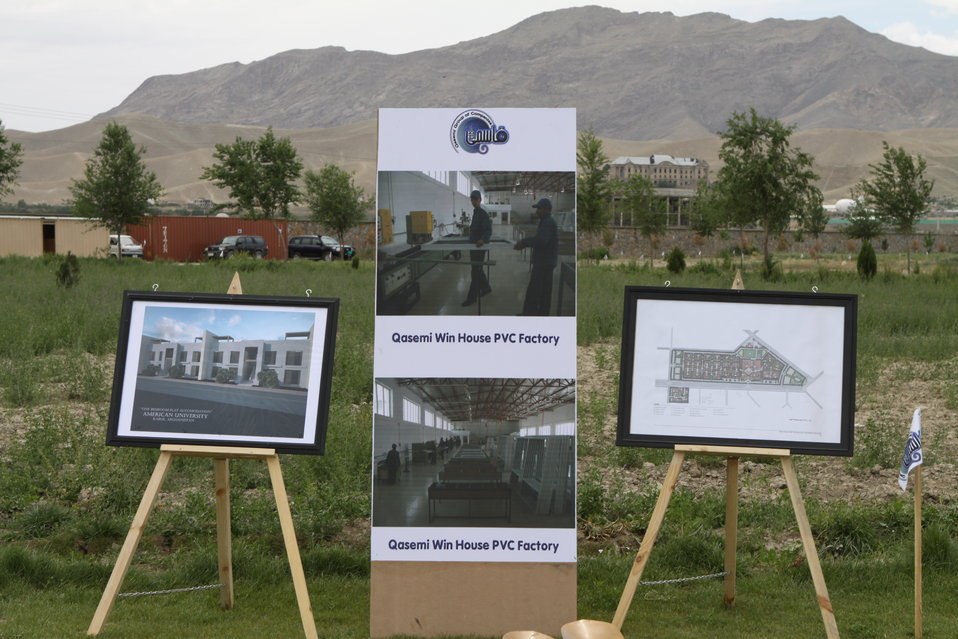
100526 AUAF Graduation 393